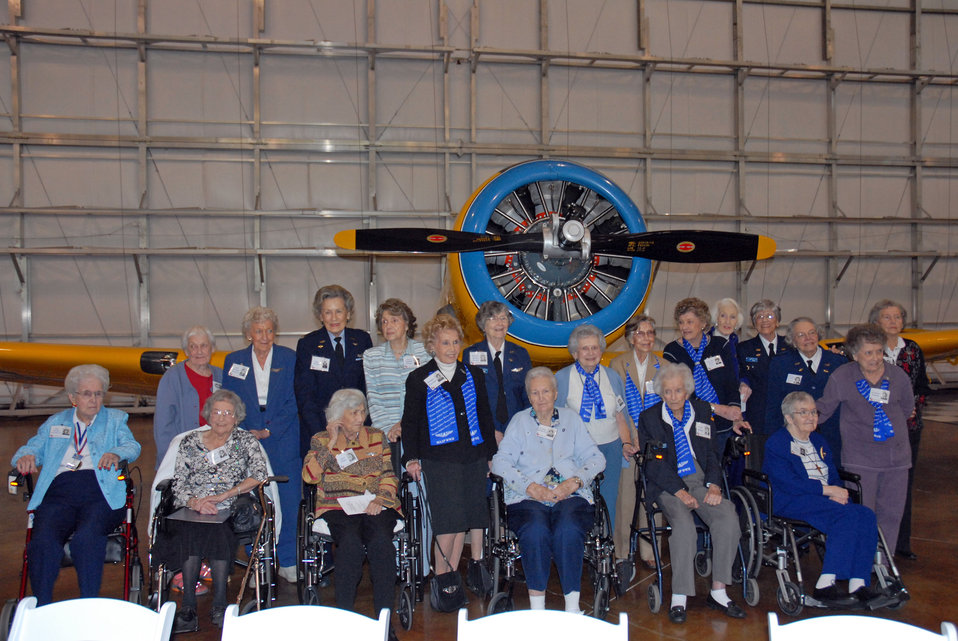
Texas WASP honored by senator

Twenty-one Texas-native Women Airforce Service Pilot aviators from World War II gather for the presentation of a commemorative copy of Bill 111-40, which awards them the Congressional Gold Medal, the highest award the Congress can bestow a civilian for service to their country Nov. 11, 2009, at Love Field in Dallas. Many WASP officials flew the T-6 Texan, and take a moment to take a photograph beside one following the presentation.